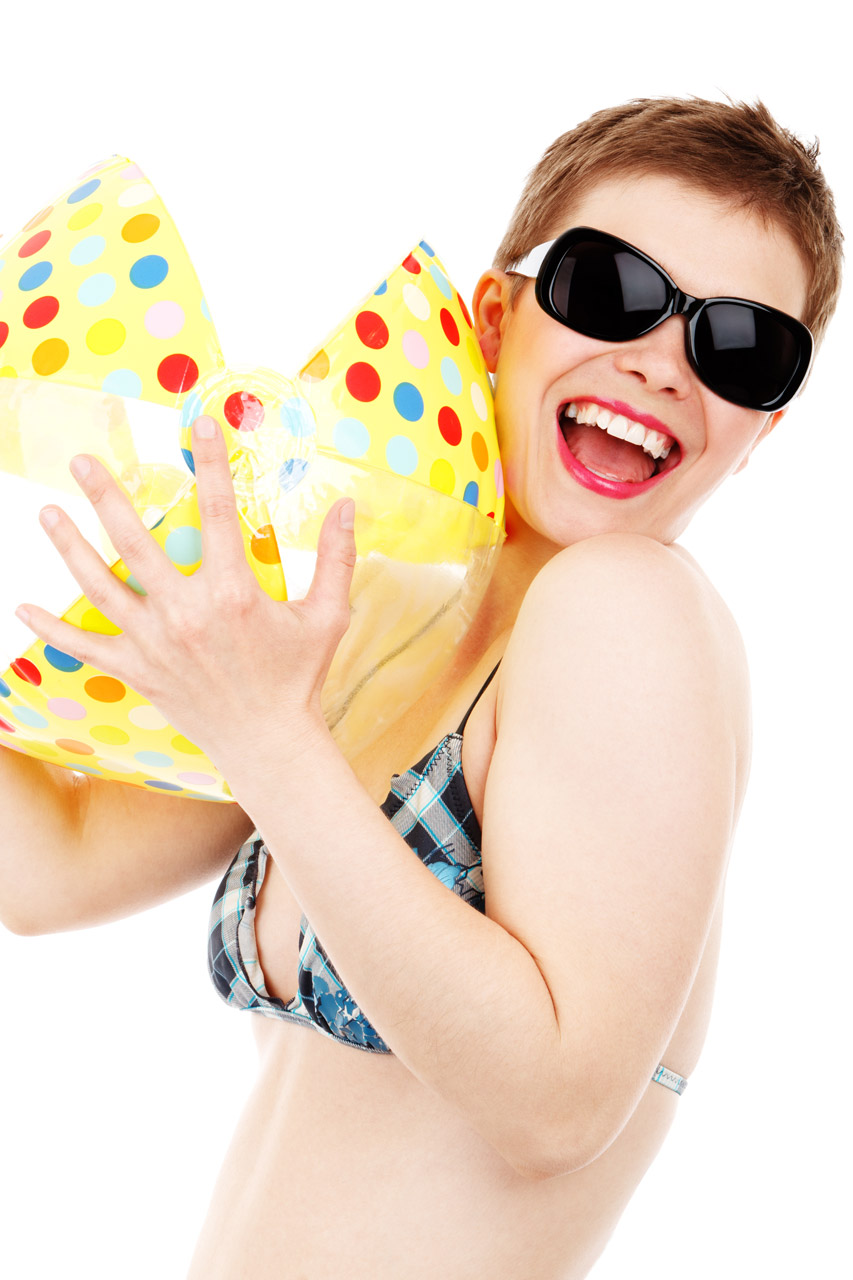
Bikini girl and ball

Young woman in bikini with a beach ball isolated on white background.